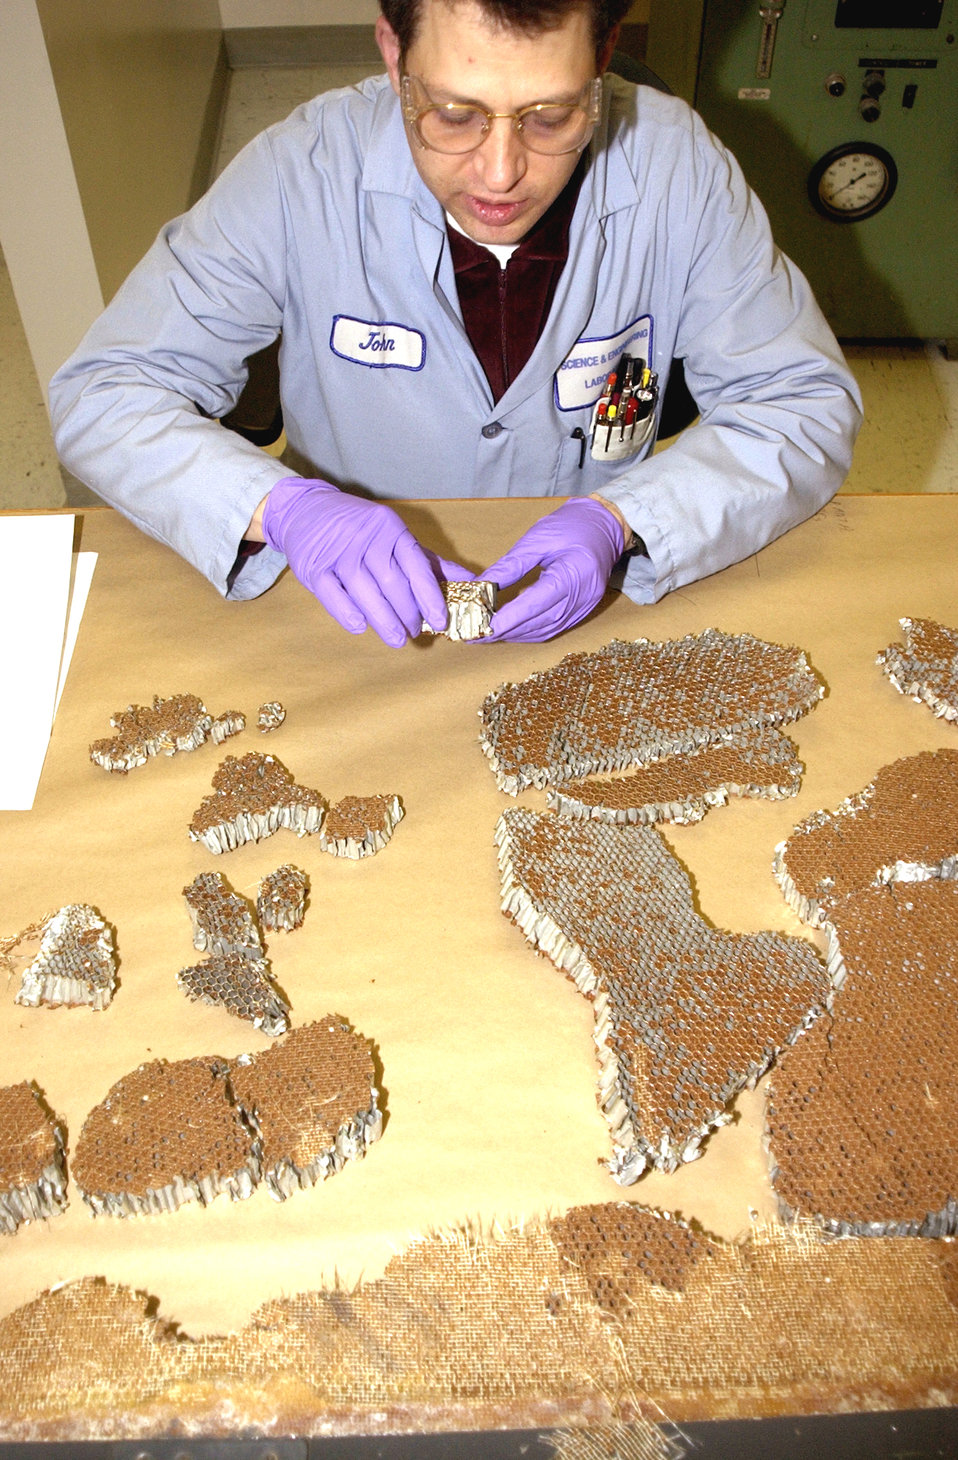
Hill employees get down to details

HILL AIR FORCE BASE, Utah -- Like a puzzle, John Jusko, a materials engineer, pieces together broken parts of a T-38 Talon to determine the cause of a mishap.